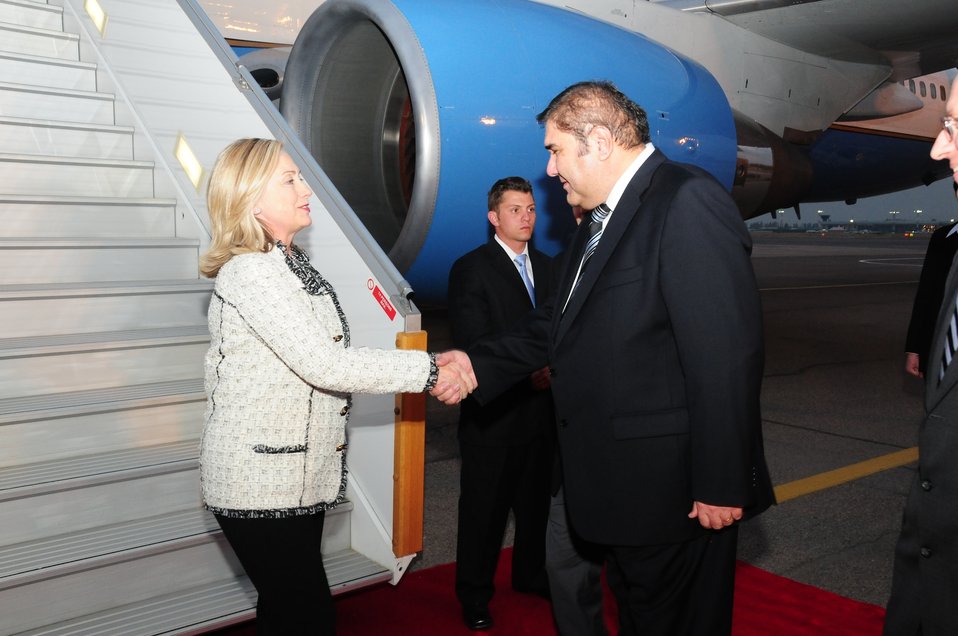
Secretary Clinton Is Greeted By Uzbek Foreign Minister Ganiev

U.S. Secretary of State Hillary Rodham Clinton is greeted by Uzbek Foreign Minister Elyor Ganiev upon her arrival to Tashkent, Uzbekistan, on October 22, 2011.